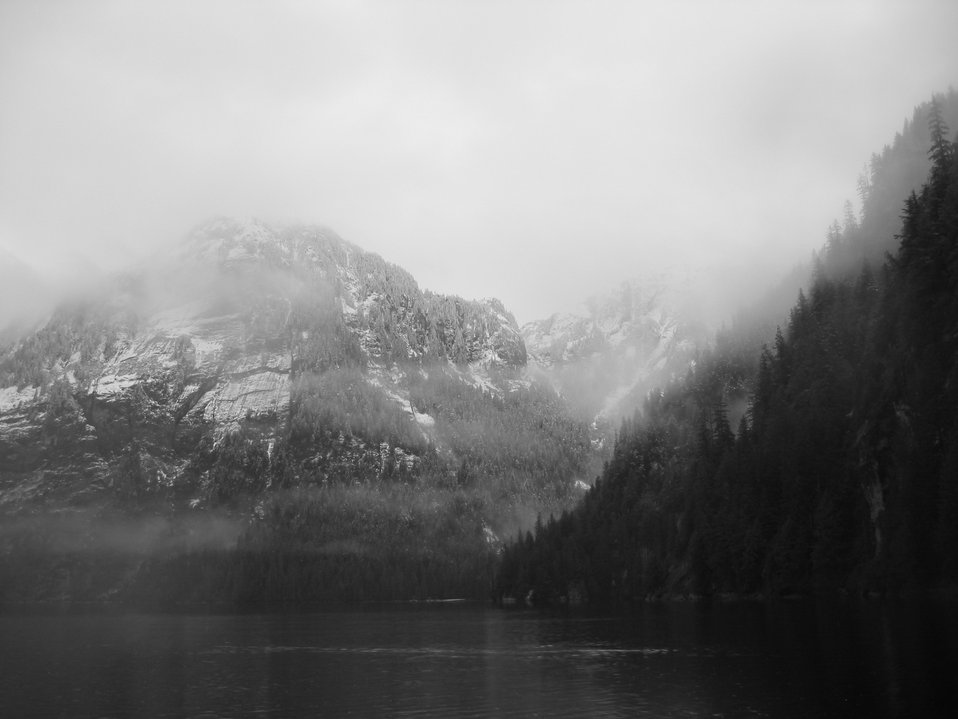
Fly-away setup.